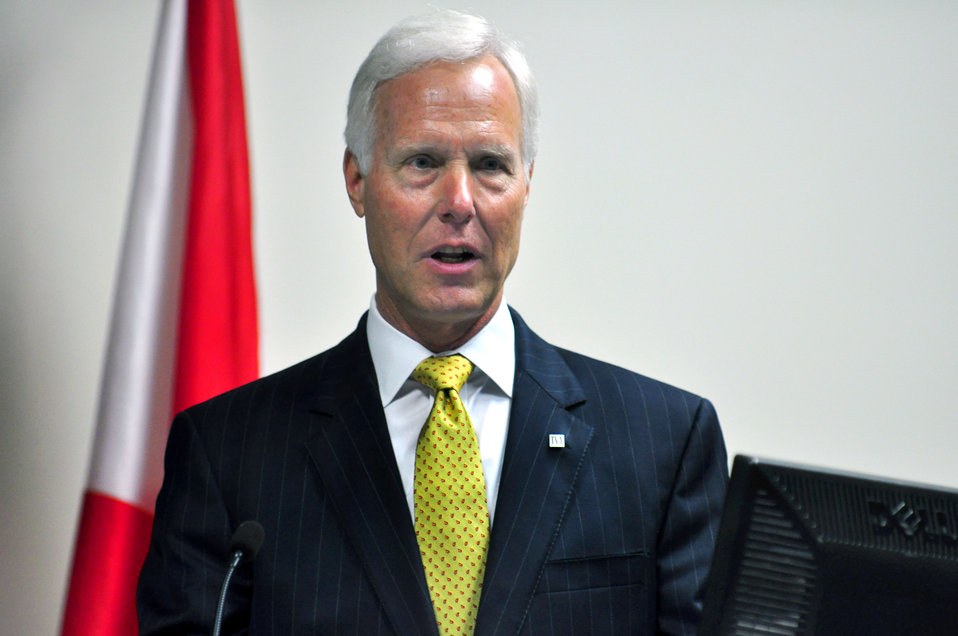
Tennessee Valley Corridor Summit Oak Ridge

13-062 DOE photo Lynn Freeny 5-29-2013 Oak Ridge Tennessee